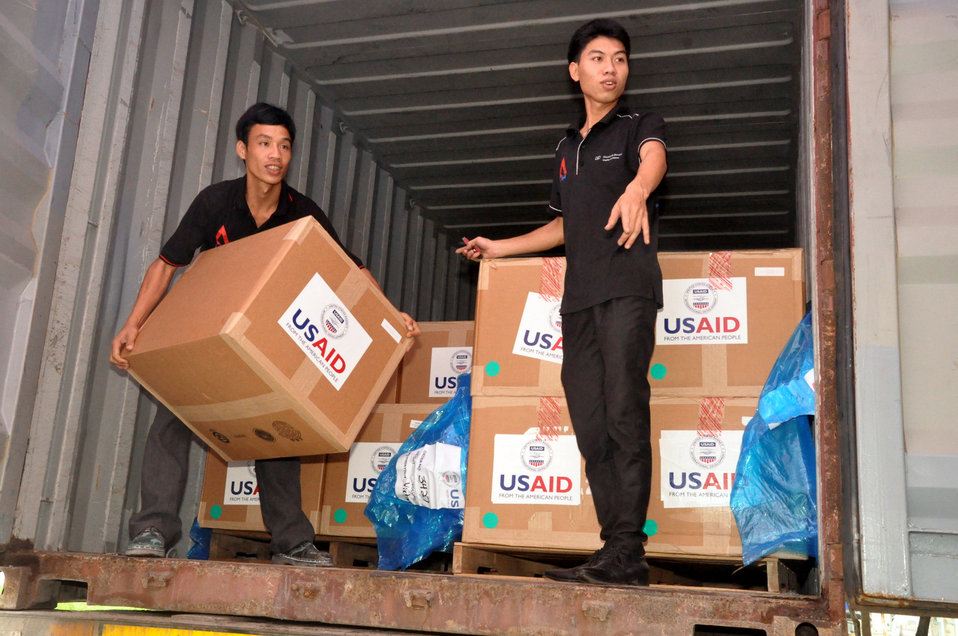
U.S. Provides Protective Gear to Help Prevent Disease Outbreaks